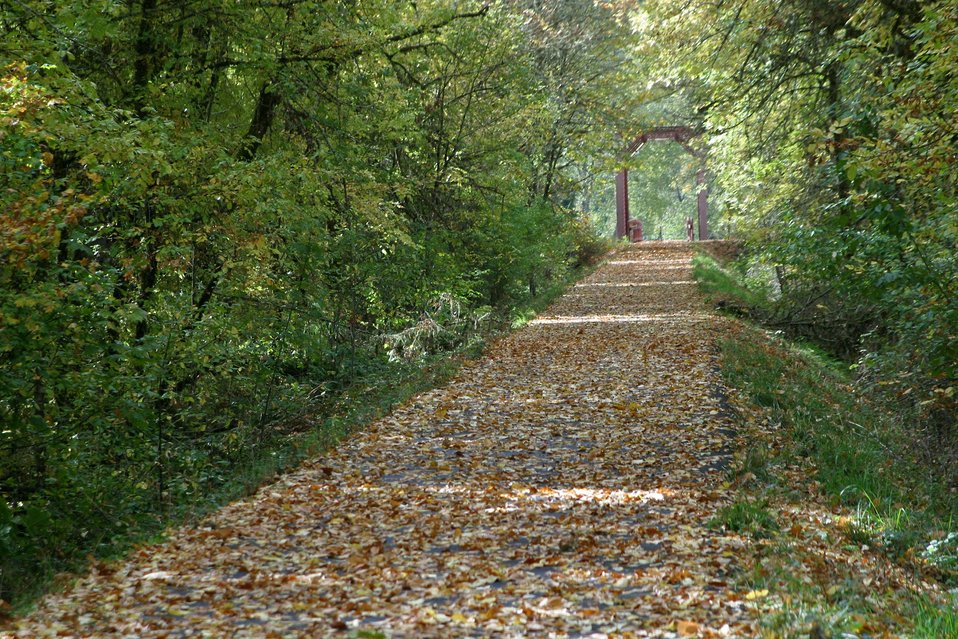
The the 15.6 mile Row River Trail trail not only attracts mountain bicyclists and horseback riders, but also road bicyclists and even a few in-line skaters.